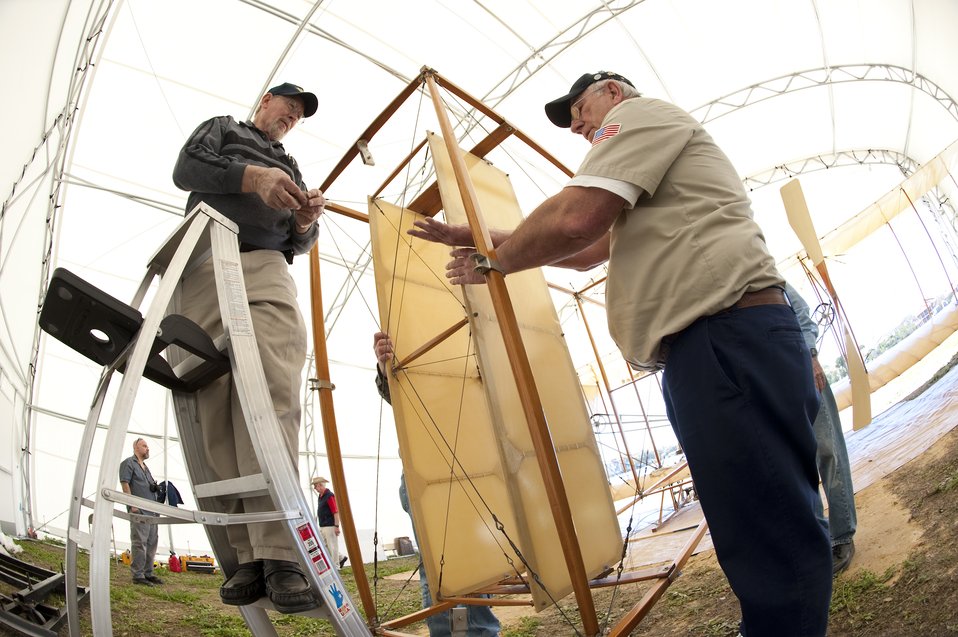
Wright

Don Gum (on ladder) and Richard Holt (right) work together to reattach a rudder. Wright